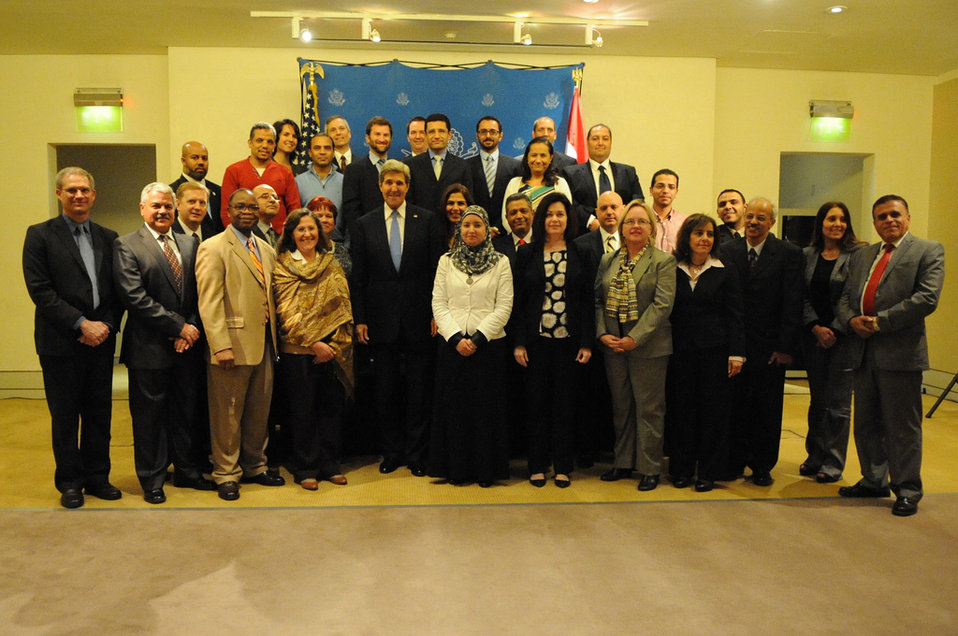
Secretary Kerry Poses for a Photo With Embassy Cairo Staff

U.S. Secretary of State John Kerry poses for a photograph with staff members of the U.S. Embassy in Cairo, Egypt, on November 3, 2013.